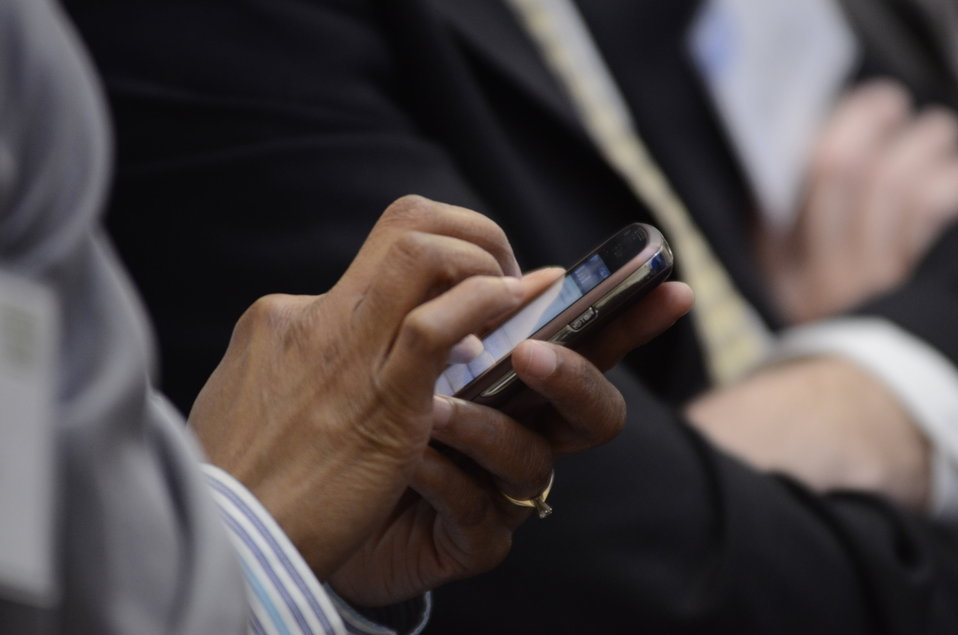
Unlike most events where mobile communication devices are asked to be turned off, Agriculture Deputy Secretary Kathleen Merrigan asked that they remain on allowing people to have access to social media conversations in a continuations the National Conversation on Local and Regional Food projects and how they offer economic opportunities to local farmers, ranchers and food entrepreneurs. using the new web-based Know Your Food Compass, the conversation covered many aspects about food, such as infrastructure, stewardship, local meat and poultry, Healthy food access, careers in agriculture and local food knowledge. The virtual conversation took place at the White House, and Twitter was used to expand the conversation worldwide, from Washington, D.C., on Monday, March 5, 2012.